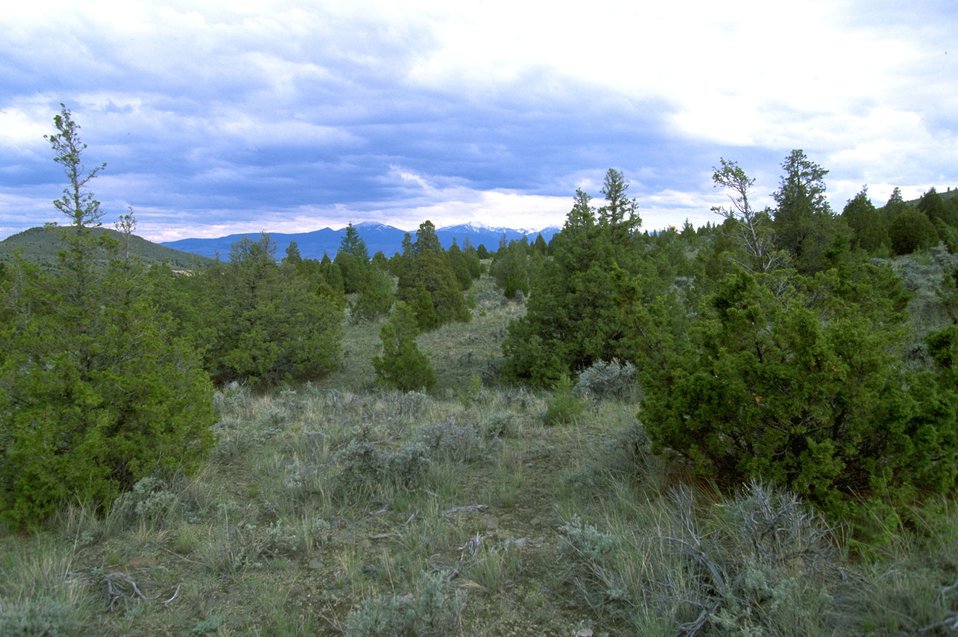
Sagebrush, mountains and trees